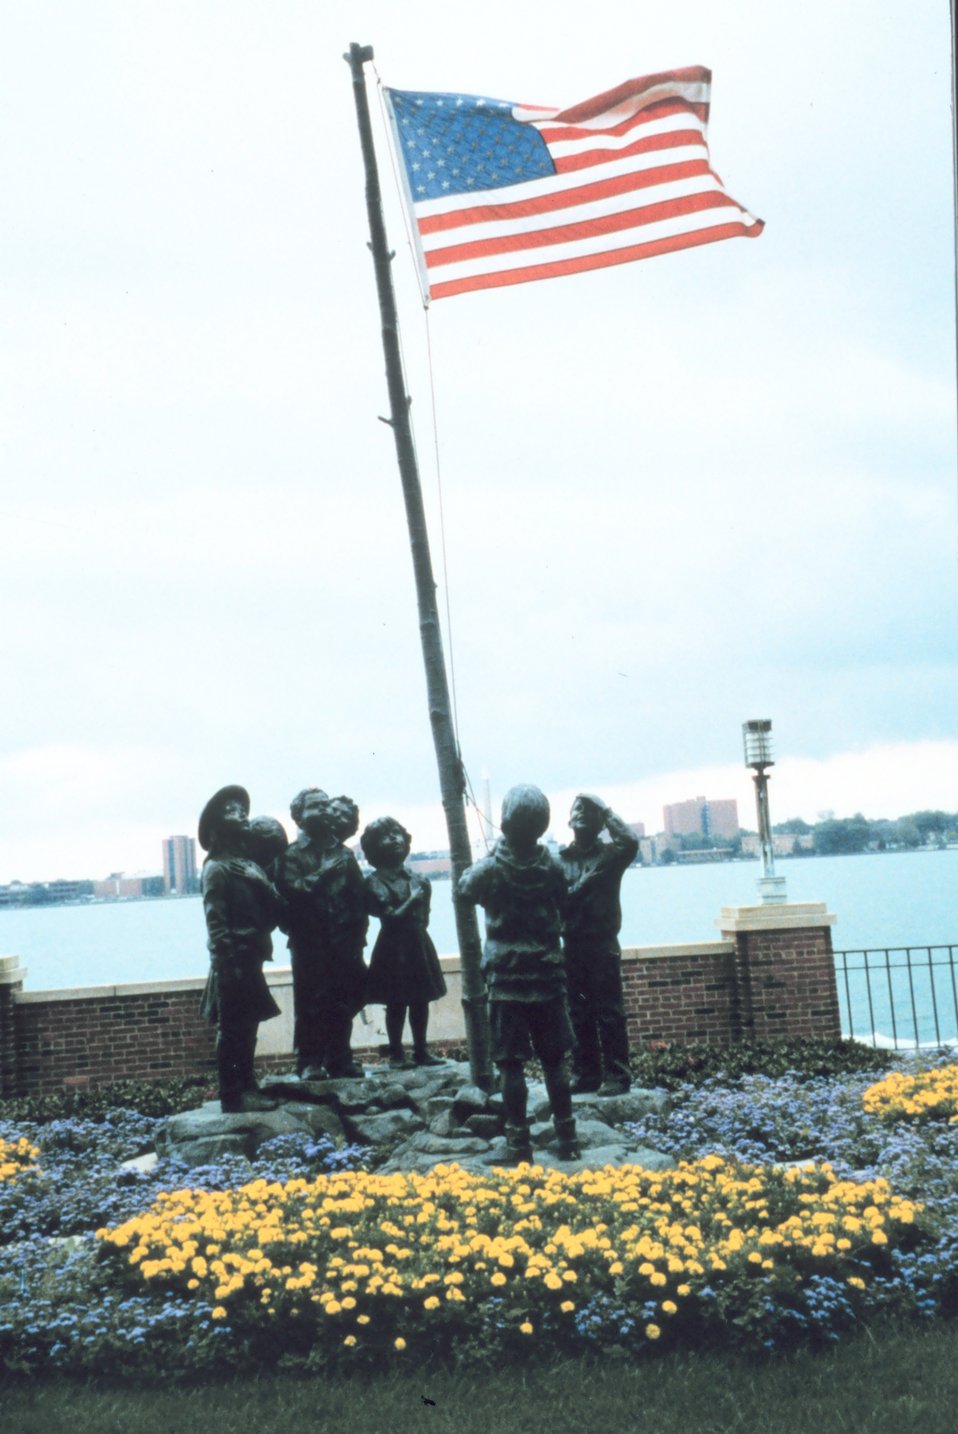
Park along Detroit River